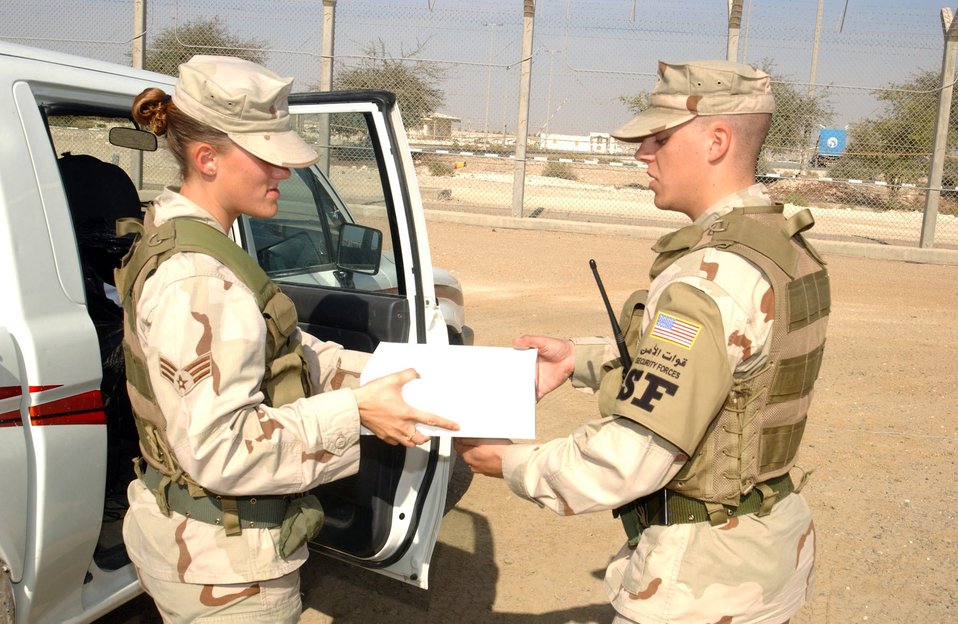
Special delivery

SOUTHWEST ASIA (AFPN) -- Senior Airman Amber Sigler delivers a box lunch to Airman 1st Class Richard Straut at a guard tower on Christmas Eve. Airman Sigler is deployed here from the 436th Security Forces Squadron at Dover Air Force Base, Del., and Airman Straut from the 52nd Security Forces Squadron at Spangdahlem Air Force Base, Germany.